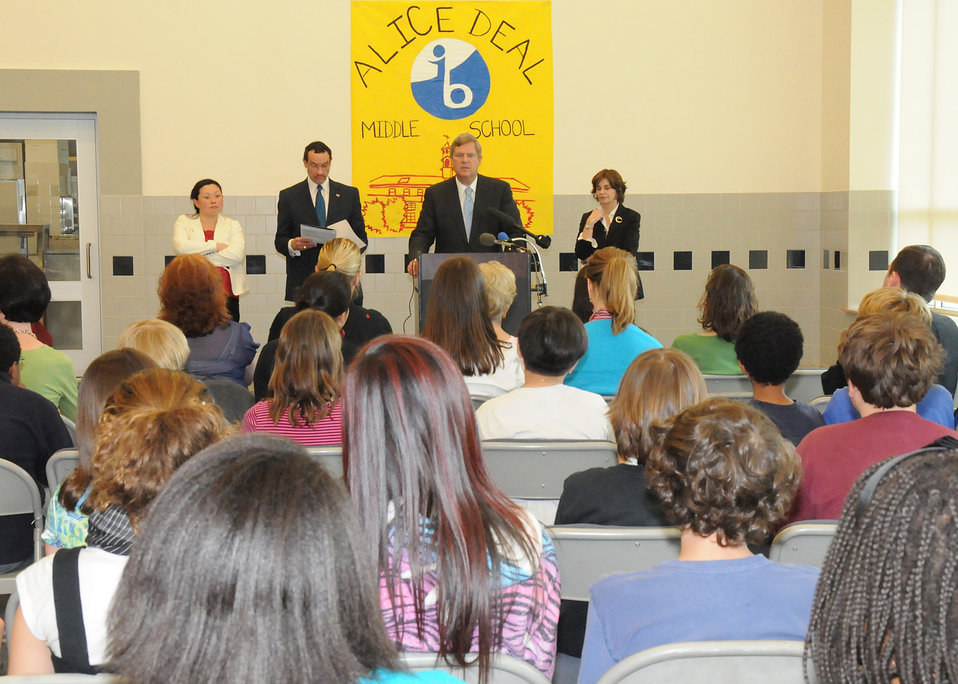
Agriculture Secretary Tom Vilsack joins local officials, school officials, and students at Alice Deal Middle School in Northwest Washington D. C., to promote the “Healthy Schools” legislation passed by the D.C. Council and to emphasize the Obama Administration priorities for improving school meals and the health of America’s children. Secretary Vilsack stressed the important role that the Department of Agriculture will play in implementing the recommendations from the Childhood Obesity Task Force’s action plan, “Solving the Problem of Childhood Obesity Within a Generation” on Thursday, May 13, 2010. (L to R behind the Secretary are Alice Deal Middle School Principal Melissa Kim, D. C. Council Chair Vincent Gray, and D.C. Councilwoman Mary Cheh). USDA photo 10di1358-123.